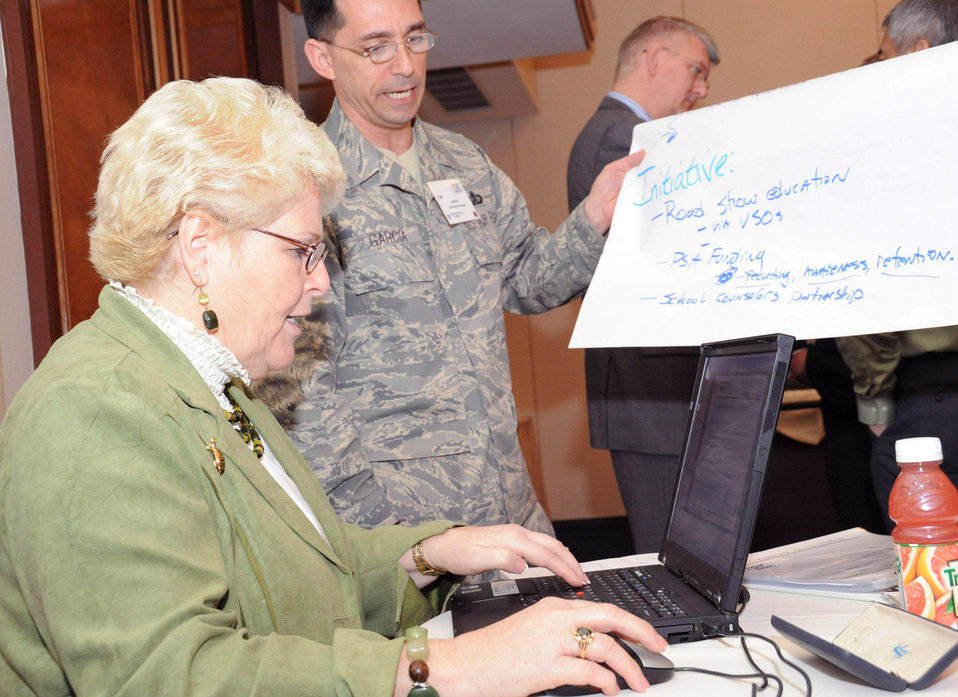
Air Force officials hold Caring for People Forum

Nancy Brewer records theme ideas from Senior Master Sgt. Cali Garcia during a working group session at the Year of the Air Force Family: Caring for People Forum April 1 at Arlington, Va. The 28-person group developed the themes and will use the best to develop initiatives focusing on support for Air National Guard and Reserve family members. Mrs. Brewer is from Peterson Air Force Base, Colo., and is the chief of Airman and Family Quality of Life for Air Force Space Command. Sergeant Garcia is the air field liaison for the National Guard Bureau J1 Family Program in Arlington.